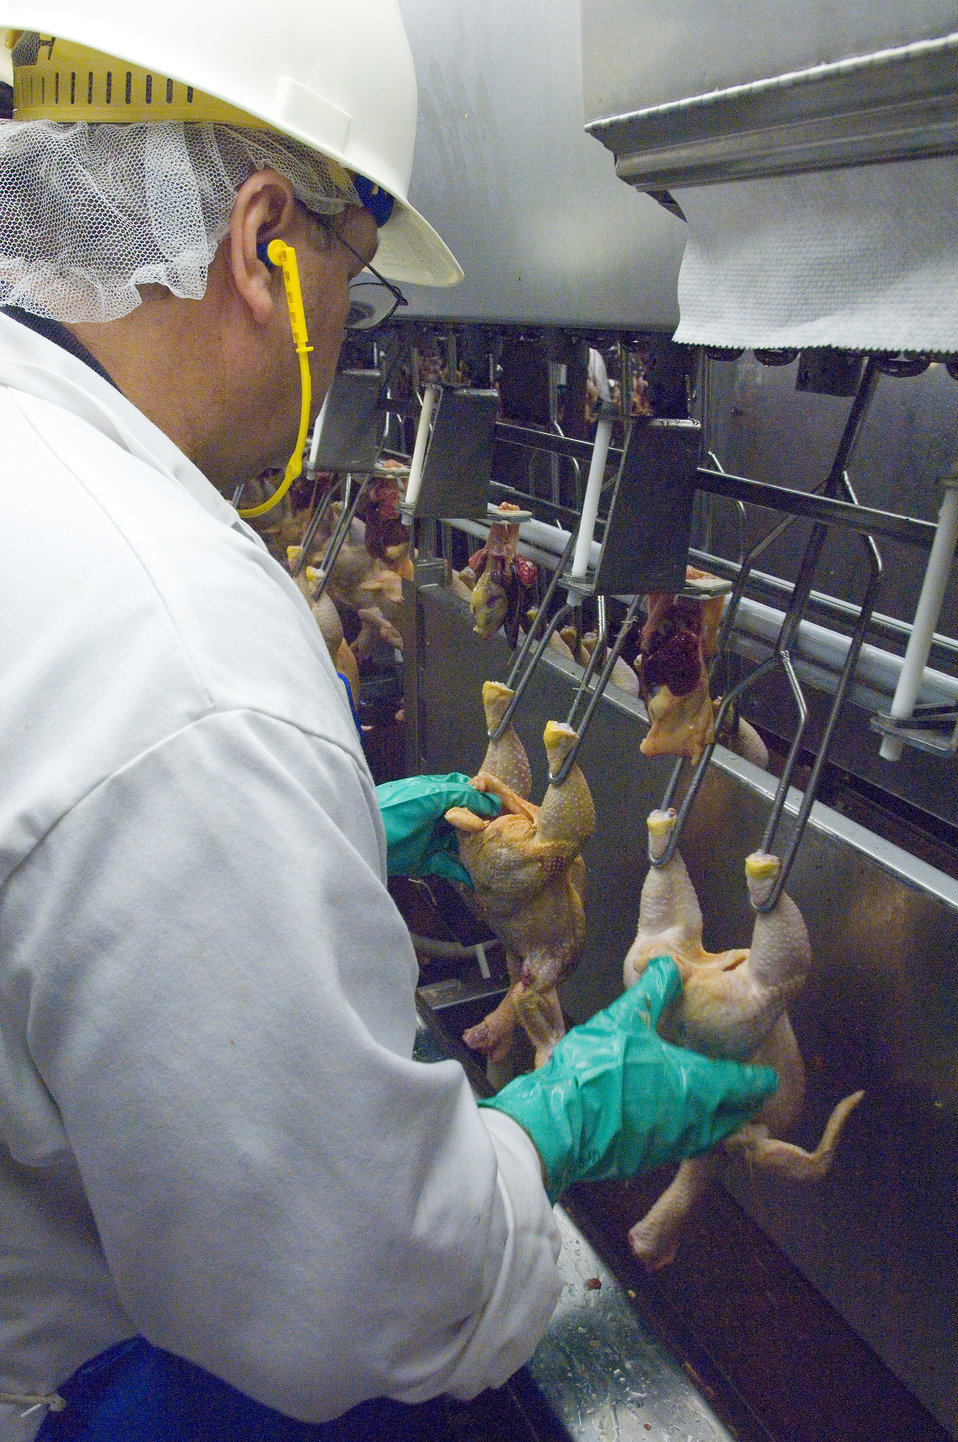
U.S. Department of Agriculture (USDA), Food Safety Inspection Service (FSIS) inspector at a poultry processing facility in Accomac, Virginia checking for cleanliness and testing poultry for the Avian Influenza (AI) virus.